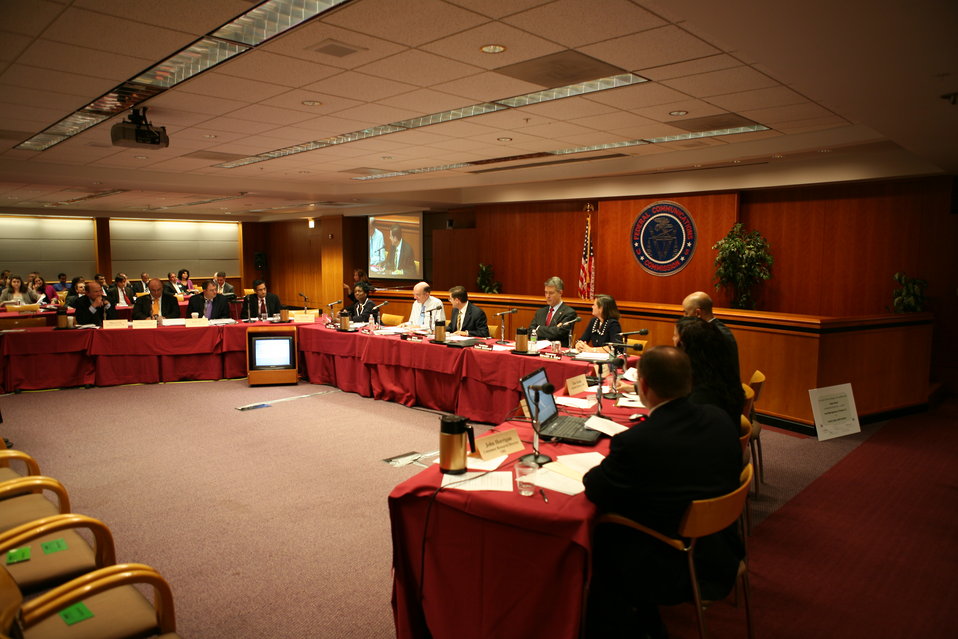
Broadband Midterm Review 9-29-09